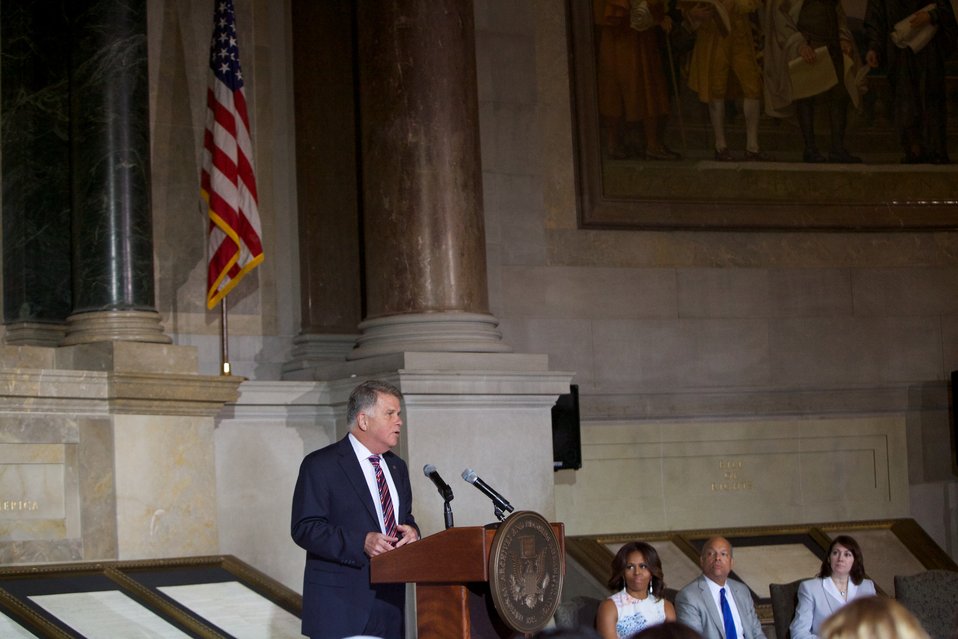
Naturalization Ceremony with Michelle Obama